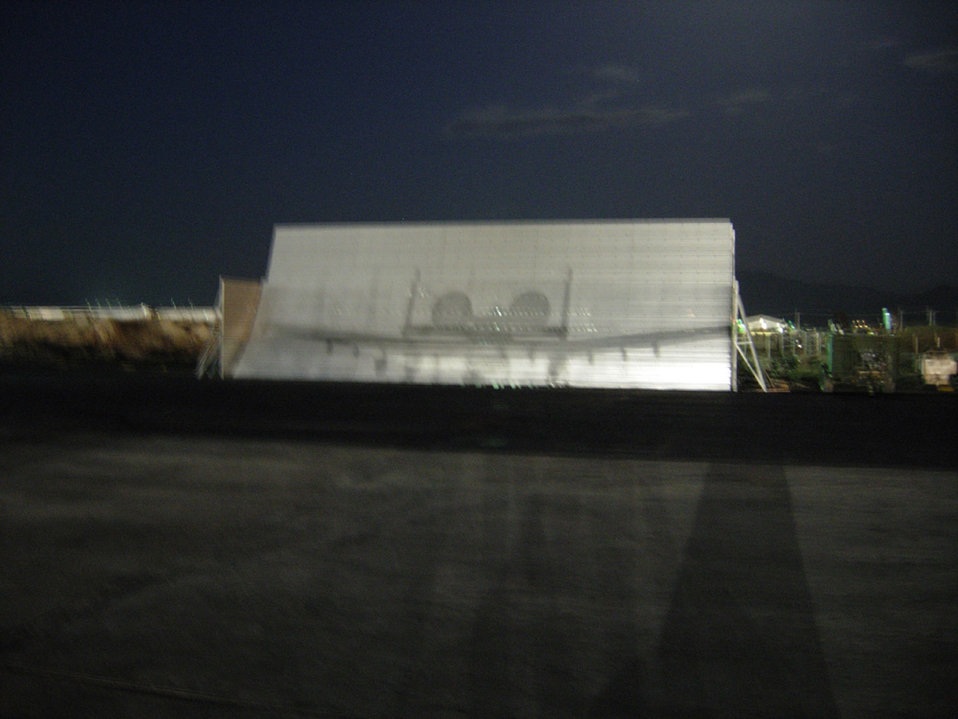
Keeping the A-10 fit to fight

An A-10 Thunderbolt II whose reflection is seen on a blast deflector at Bagram Air Base, Afghanistan sits on the trim pad waiting for an engine run. The aircraft is deployed from Spangdahlem Air Base, Germany,